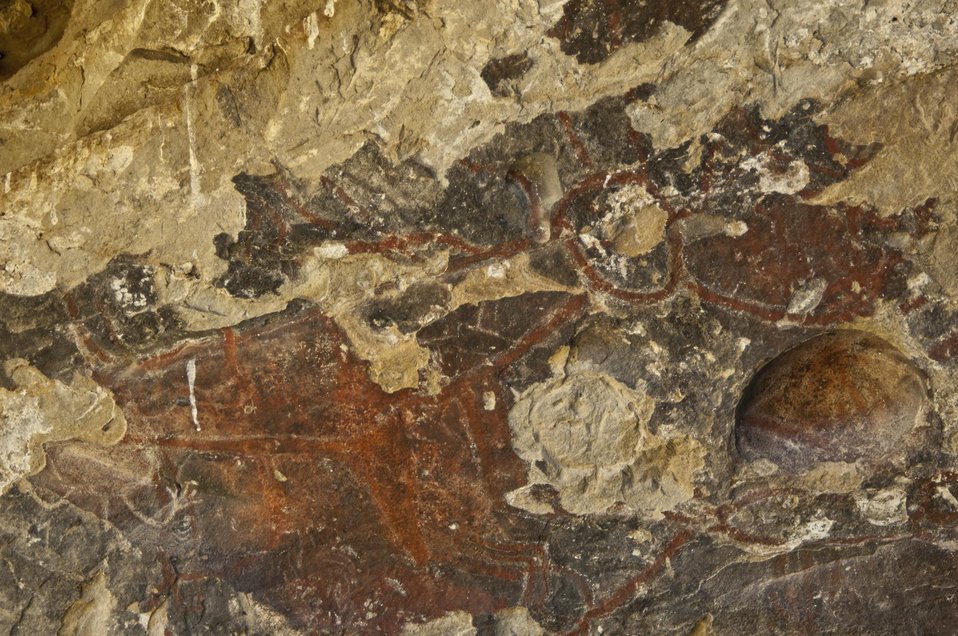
Pictograph at Painted Rock, Carrizo Plain 1